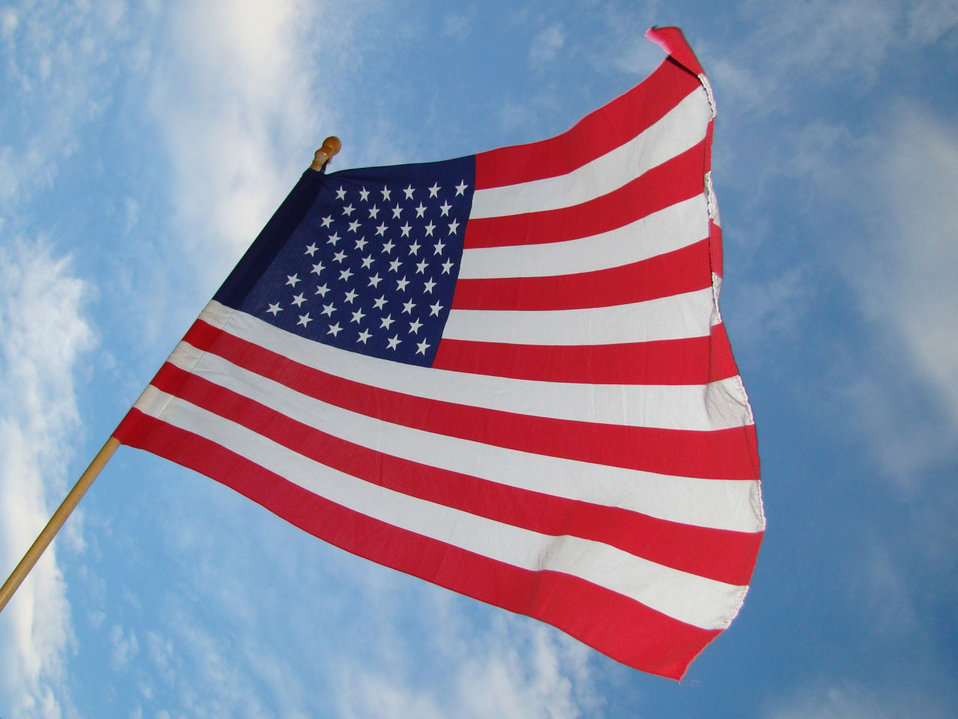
American flag

Us flag in the wind.